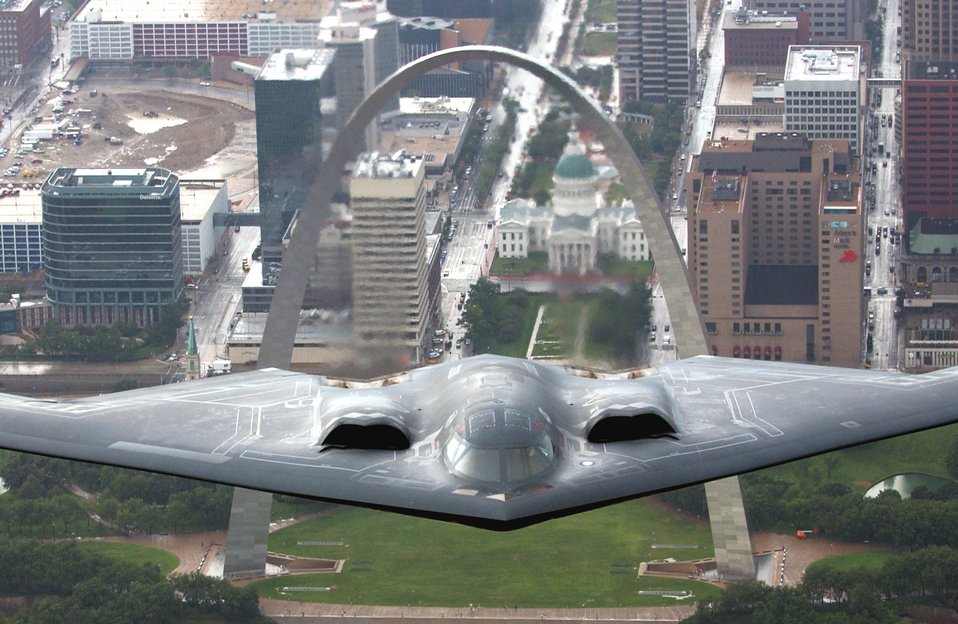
Air Force will get new bomber,

General Ronald E. Keys, Air Combat Command commander, said the Air Force is looking to get a next-generation long-range bomber by 2018. The command is funded for a new bomber, he said during his presentation Sept. 26 at the Air Force Association's Air & Space Conference and Technology Exposition in Washington D.C. Meanwhile, the current bomber fleet, including this B-2 Spirit, flying over the St. Louis Arch, will continue to be a mainstay in the war on terrorism.